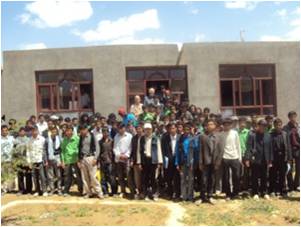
PRT Donates School Supplies to Agricultural High School